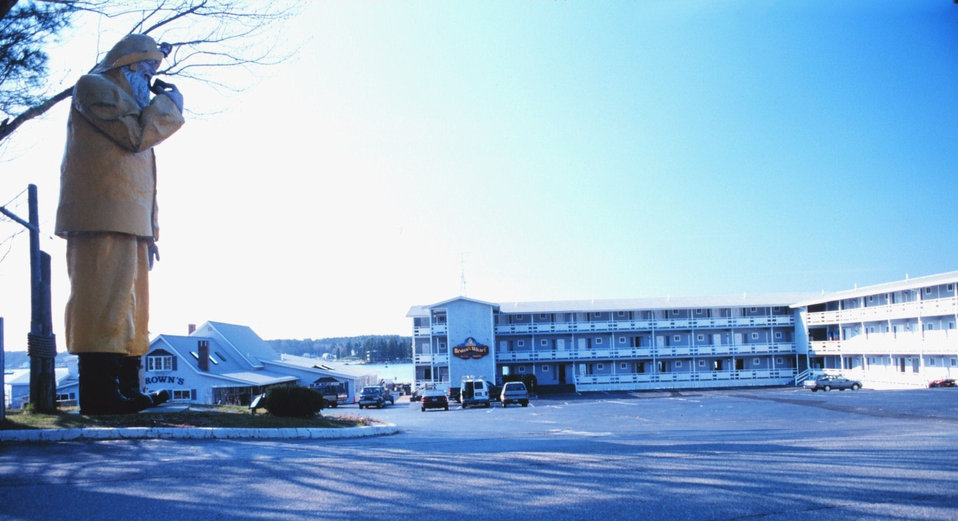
Fishing heritage used to add atmosphere to a development